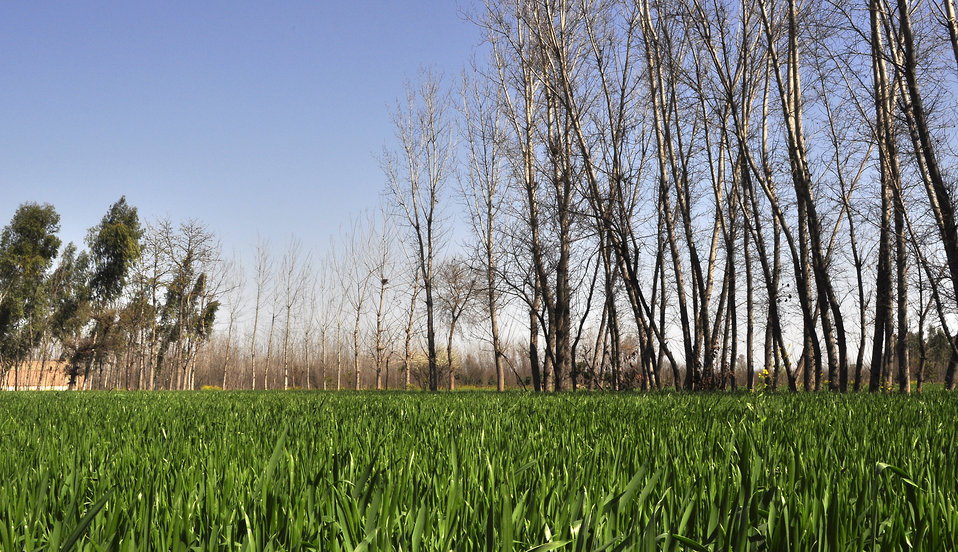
2011 March: USAID's Agricultural Recovery Program in 22 districts of Khyber Pakhtunkhwa, Punjab and Balochistan is an excellent example of the impact US development assistance can have. We have helped more than 500,000 farmers salvage the winter planting season and livestock after the floods. As a result, wheat farmers have nearly doubled their harvests. More than 5 million people have benefited. These photos show progress of the USAID Agricultural Recovery Project in Khyber Pakhtunkhwa.